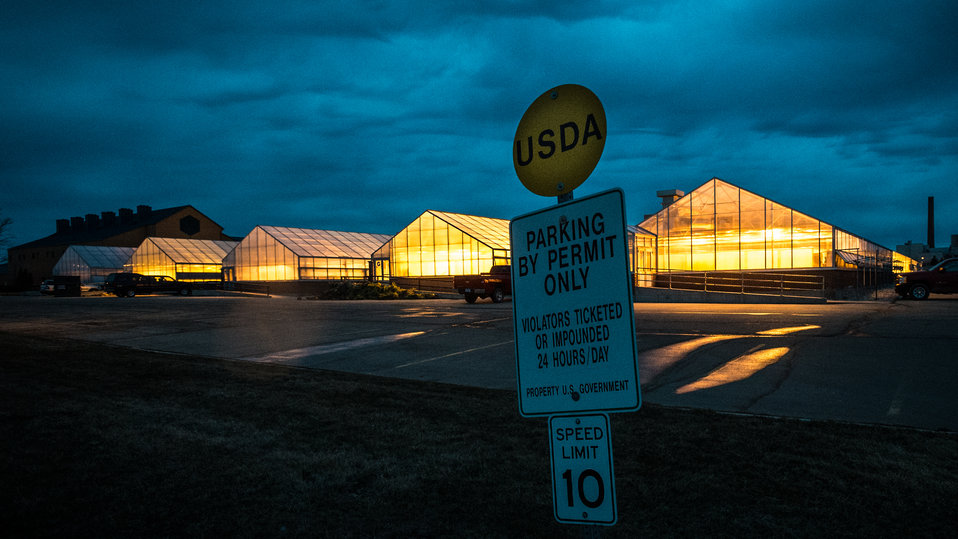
U.S. Department of Agriculture research facility at North Dakota State University, in Fargo, N.D. on Monday, April 29, 2013.